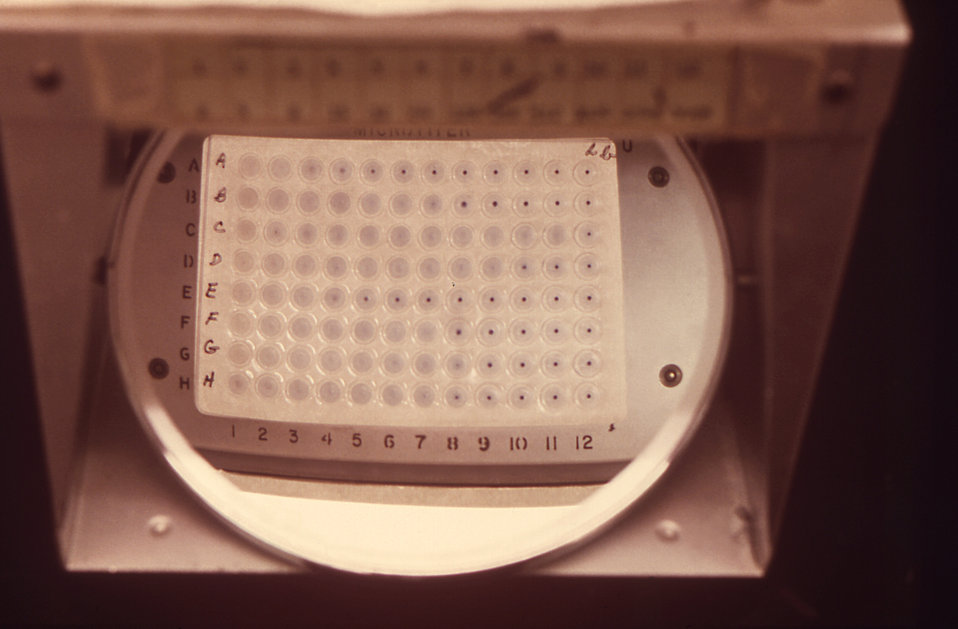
This image depicts a 96-well microtitration 'V' plate, which was being used to conduct microtiter direct agglutination tests (DAT) upon immune serum involving organisms that included Leishmania donovani, L. tropica, and L. brasiliensis, with Evans blue dye having been added to each well.